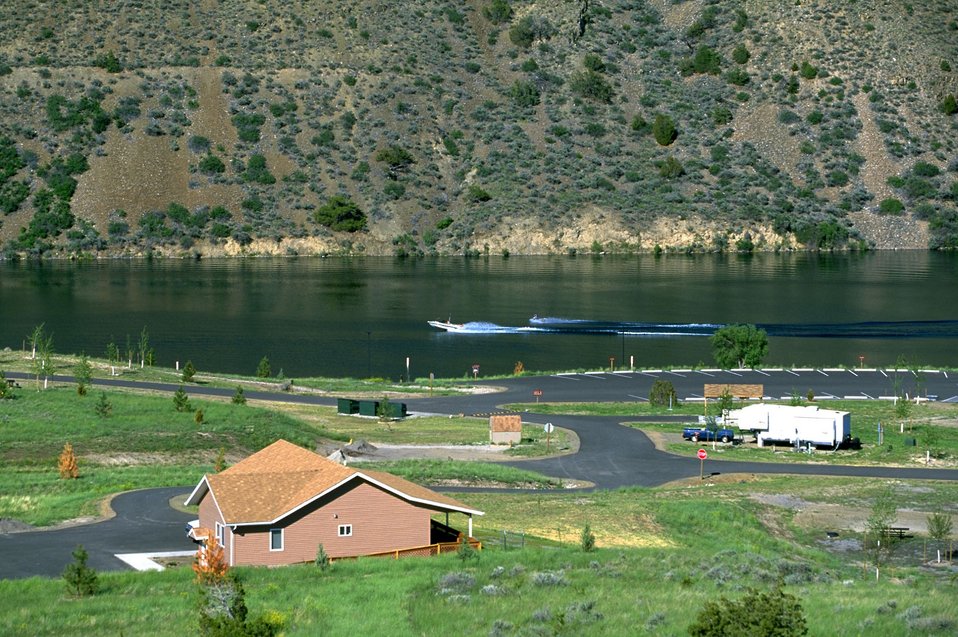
Devils Elbow Campground on Hauser Lake with view of administration building and water skier